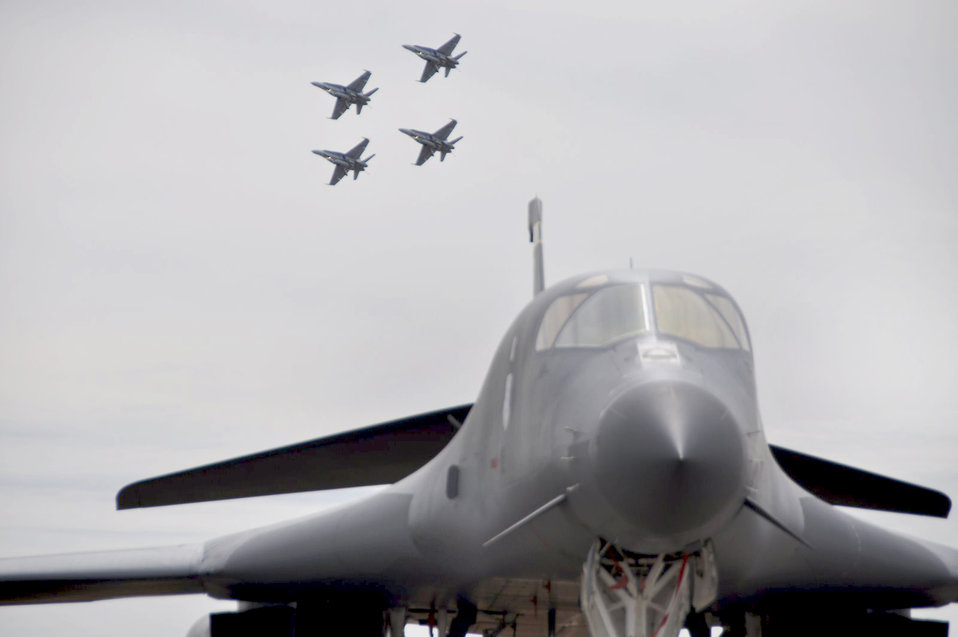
Airmen represent U.S. military at airshow 'down under'

A B-1B Lancer sits on display while four Royal Australian Air Force F/A-18s practice for an upcoming performance at the 2009 Australian International Airshow March 12 at Avalon Airport, Australia. The B-1B is from the 37th Bomber Squadron from Ellsworth Air Force Base, S.D.